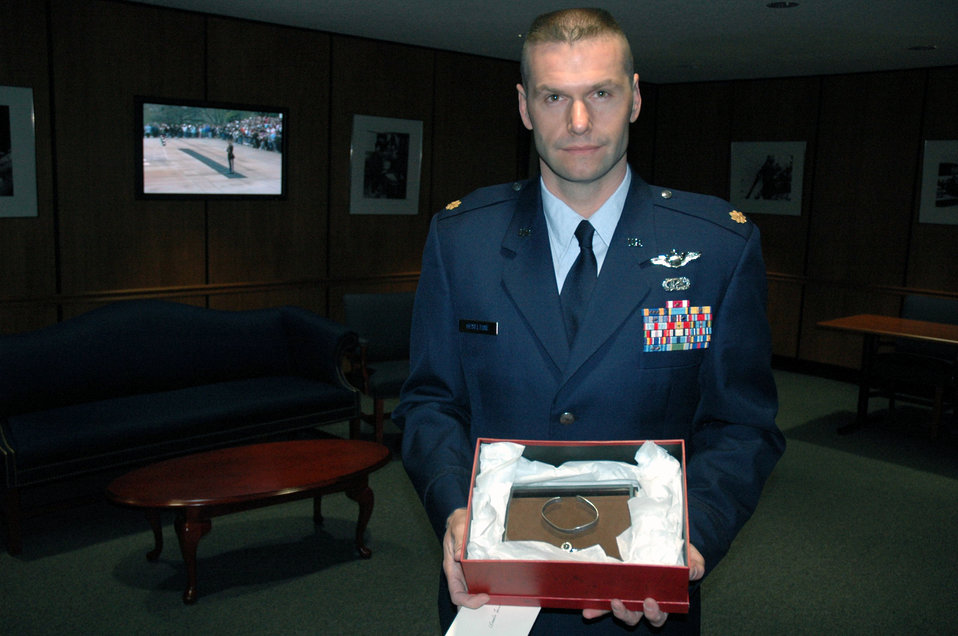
POW/MIA bracelet presented to family

Maj. Phil Heseltine shows the prisoner of war/missing in action bracelet he wore for 18 years during the funeral for Maj. Robert F. Woods April 9 at Arlington National Cemetery in Virginia. Major Heseltine presented the bracelet to the family of Major Woods, whose name is on the bracelet. Major Heseltine is the executive officer for the Air Force Expeditionary Center commander at Fort Dix, N.J.